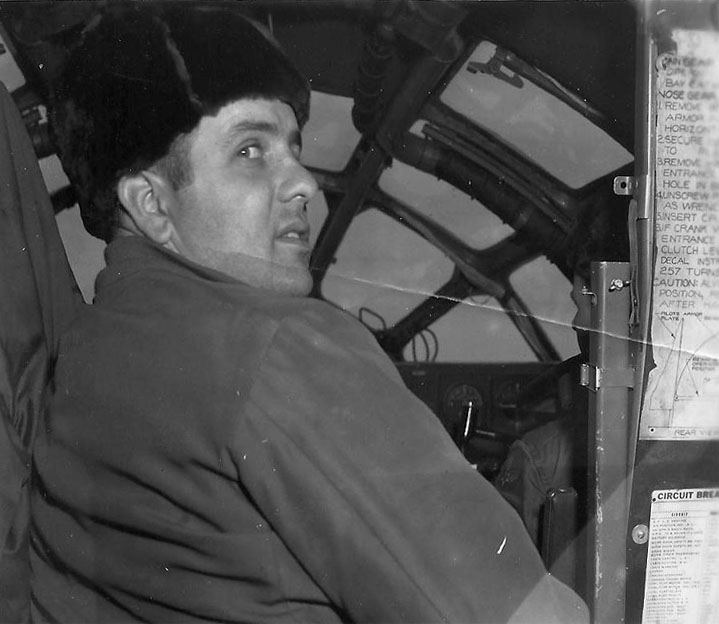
Arctic first

Then-Maj. Maynard E. White, commander of the 46th Reconnaissance Squadron,
in the instructor pilot's position of an F-13.